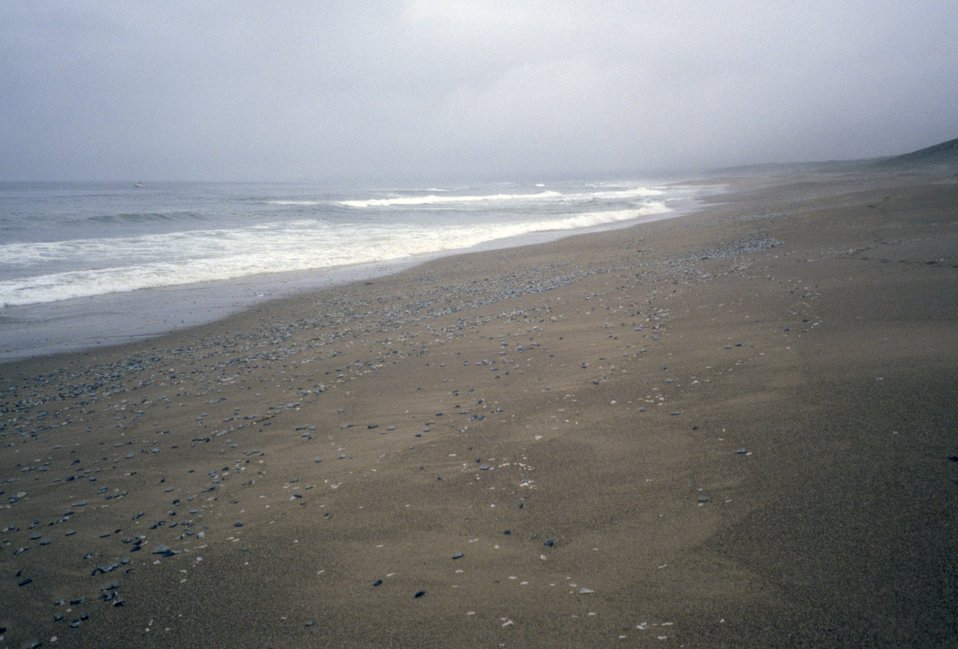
Point Reyes Great Beach